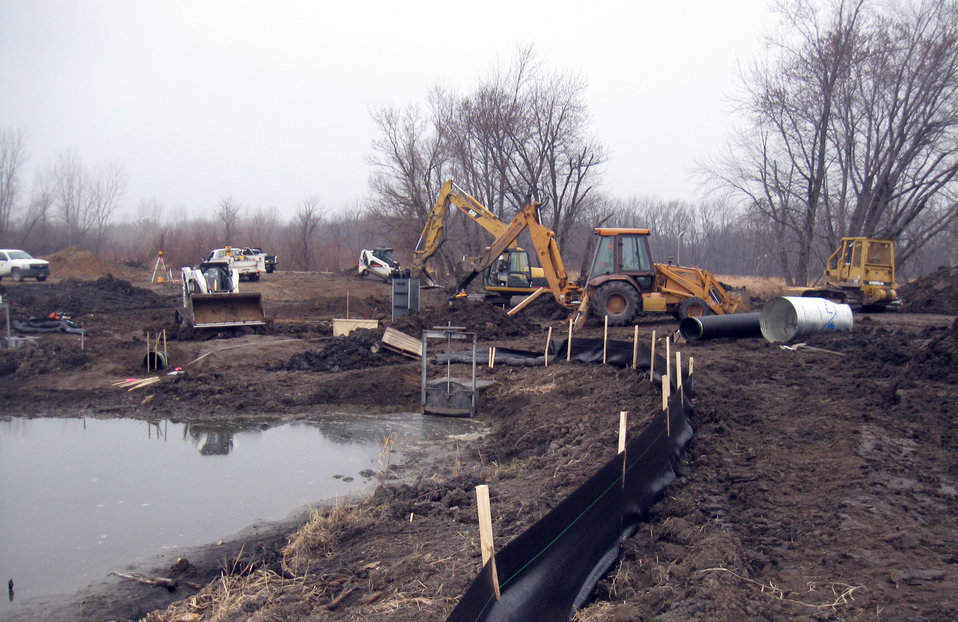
Silt Fence

Silt fences and mulch rolls are used to limit erosion and sedimentation on site.